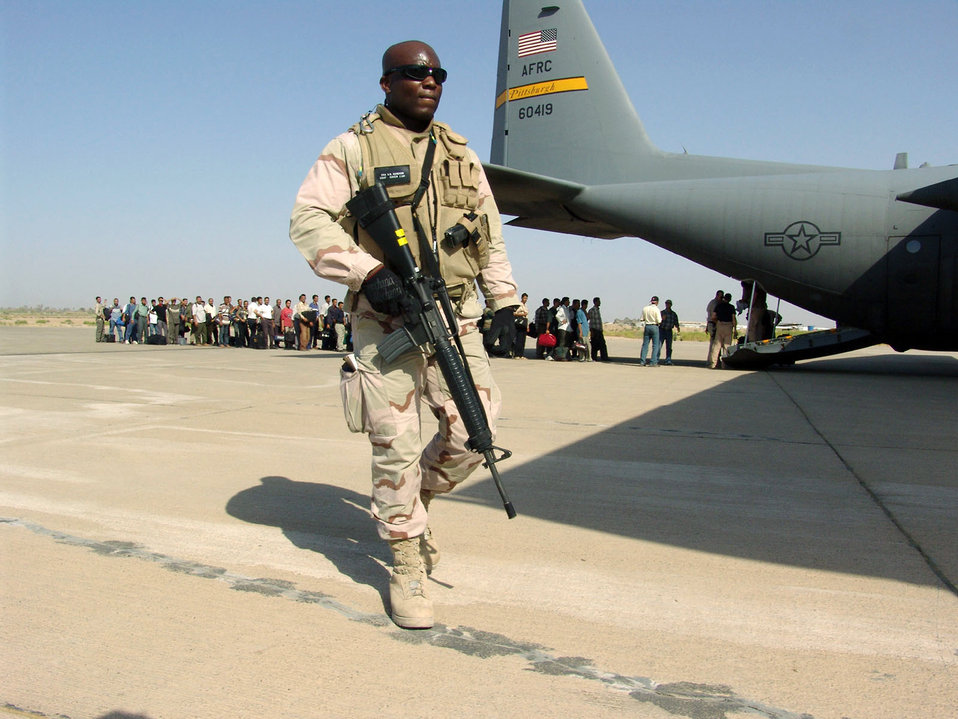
Fly away team

BAGHDAD, Iraq -- Senior Airman Kenneth Gordon provides ground security around a C-130 Hercules at Baghad International Airport as 58 Iraqi police cadets wait to board. He is assigned to the 386th Expeditionary Security Forces Squadron's fly away security team at a forward-deployed location.